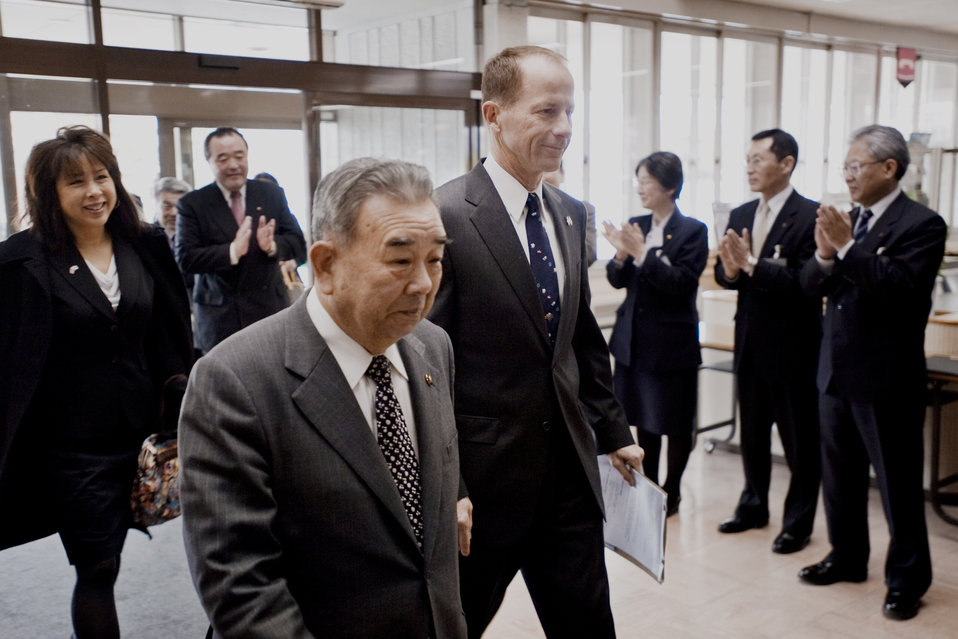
Mayor for a day

Col. David Stilwell, 35th Fighter Wing commander at Misawa Air Base, Japan, and Misawa City Mayor Kazumasa Taneichi enter city hall March 23, 2010, during the Misawa Mayor for a Day event. During the event, Colonel Stilwell assumed the role of honorary Misawa City Mayor for one day.